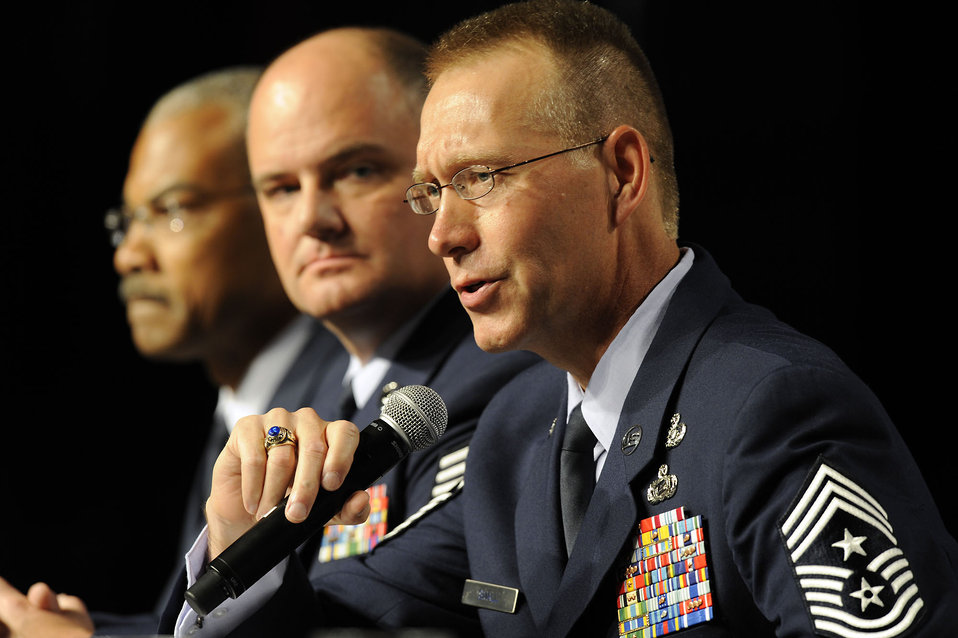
Command Chiefs Forum

Chief Master Sgt. Todd Small (right), command chief for Air Force Space Command, answers a question Sept. 13, 2010, during a command chiefs' forum at the Air Force Association's Air and Space Conference and Technology Exposition at National Harbor in Oxon Hill, Md. The panel was led by Chief Master Sgt. of the Air Force James Roy.